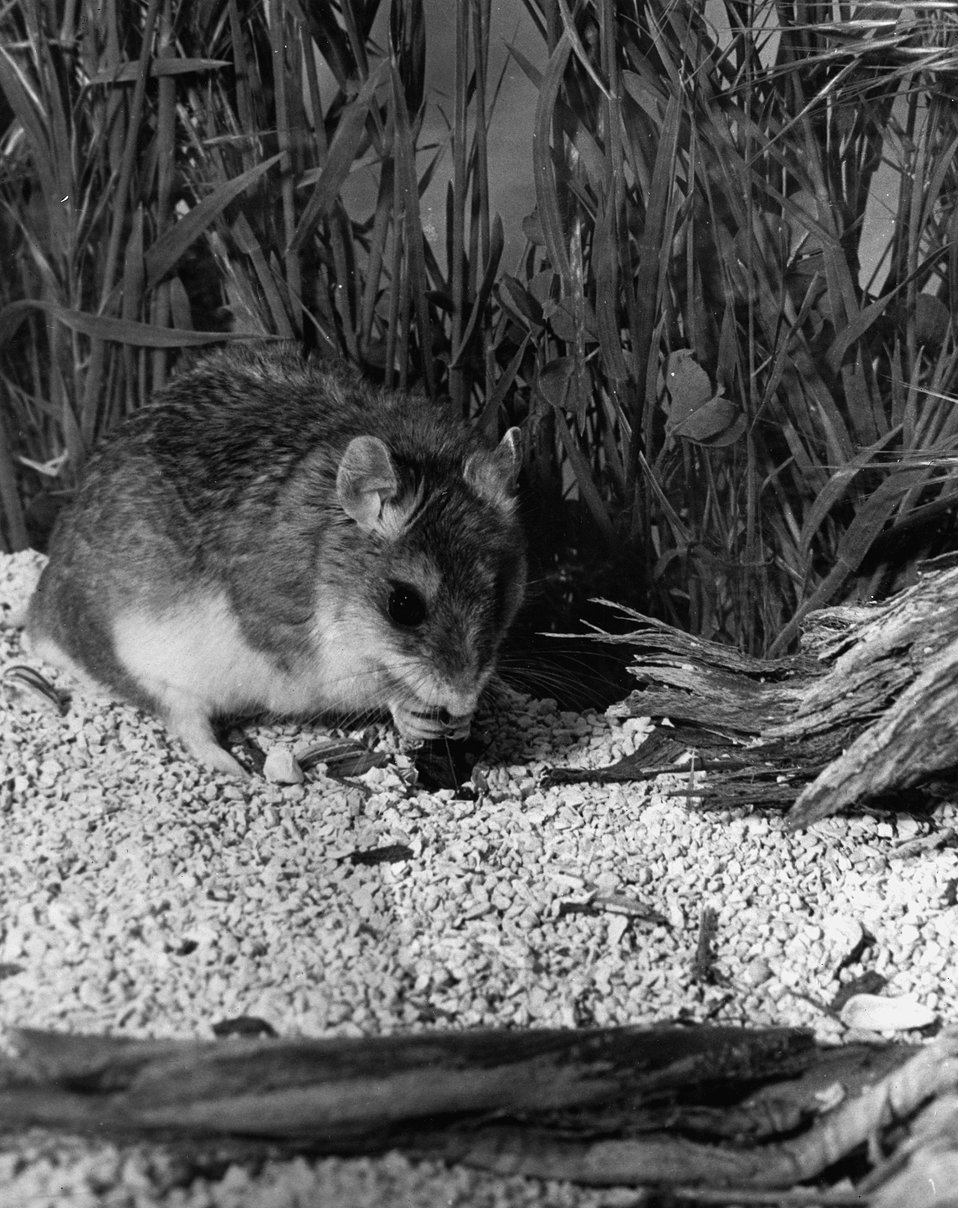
Grasshopper mice learn rapidly that darkling beetles emit an offensive odor. c. 1969